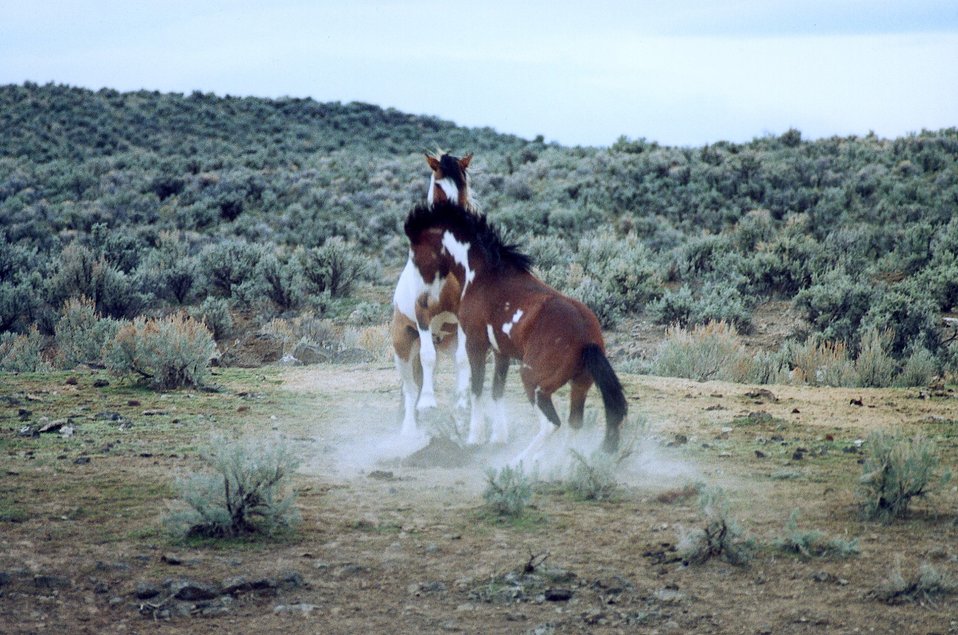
Medium shot of two wild stallions playing.